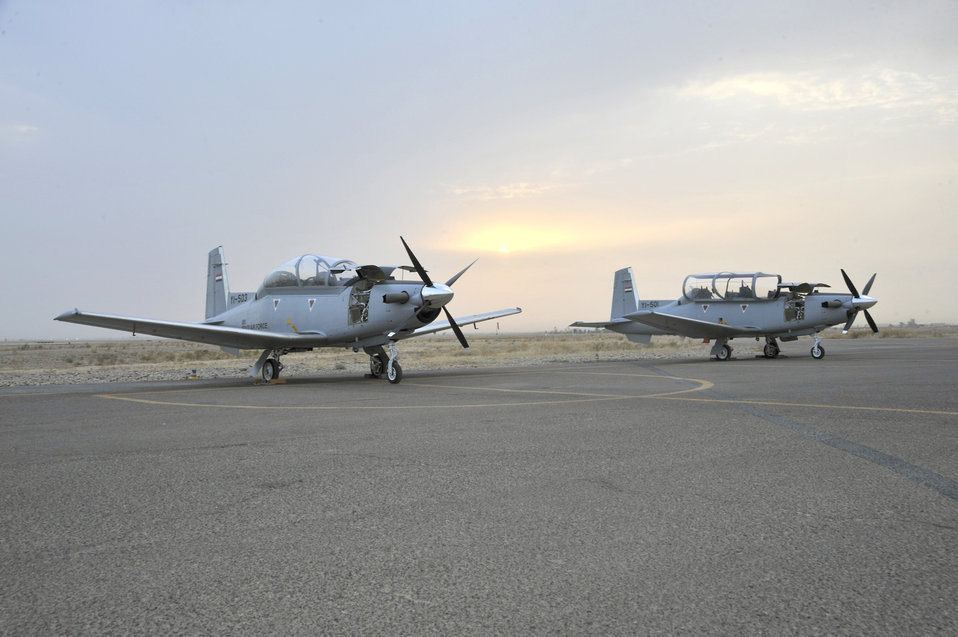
Iraqi air force pilots train with T-6A

Iraqi air force T-6 Texan IIs sit on the flightline Sept. 26, 2010, at Tikrit Air Base, Iraq. Instructor pilots from the 52nd Expeditionary Flying Training Squadron are training and advising the first group of Iraqi air force instructor pilots on the T-6A Texan II as part of the advice, train, assist and equip mission of Operation New Dawn. Once qualified, the Iraqi air force pilots will become instructor pilots and continue to train the next generation of pilots.